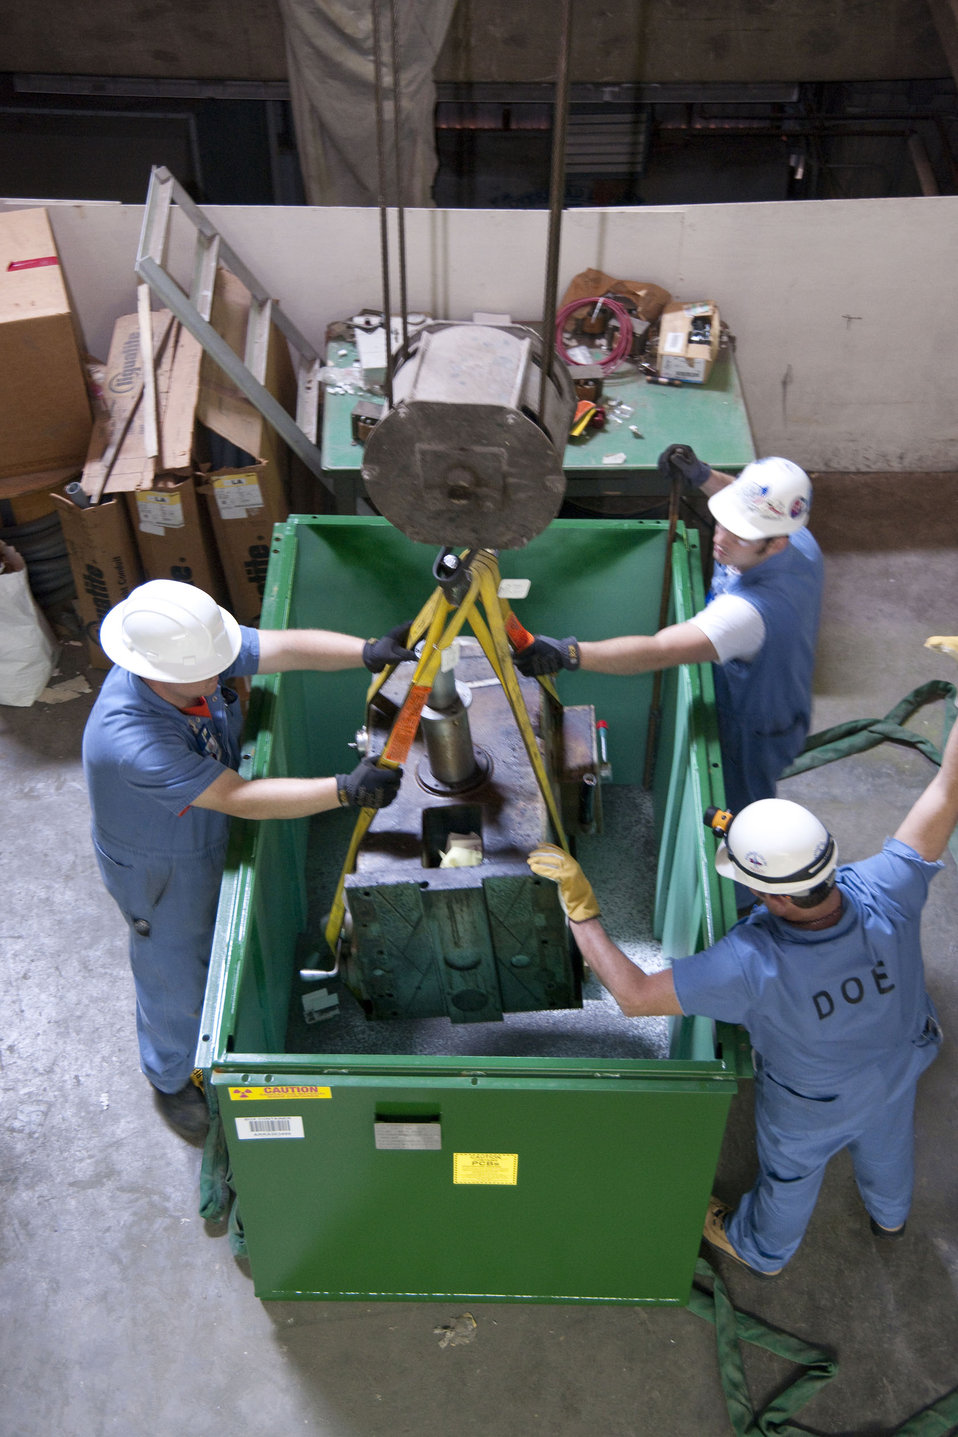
Skilled Workers Bruised by Recession Find New Start in Oak Ridge Recovery Act Work

Efforts to clean up waste from the Manhattan Project and the Cold War are under way at the Y-12 National Security Complex. The seven projects there funded by $216 million from the Recovery Act are providing work for more than 1,500 Americans, many of whom had struggled in the recent recession.

In addition to the work at Alpha 5 and Beta 4, Recovery Act projects at Y-12 include the West End Mercury Area storm sewer cleanup project, removal of soil contaminated with mercury, and the cleanup of a 7-acre scrap yard. In January 2011, Recovery Act workers completed the demolition of Building 9211 at Y-12, which reduced the footprint of the Cold War legacy by more than 83,000 square feet.